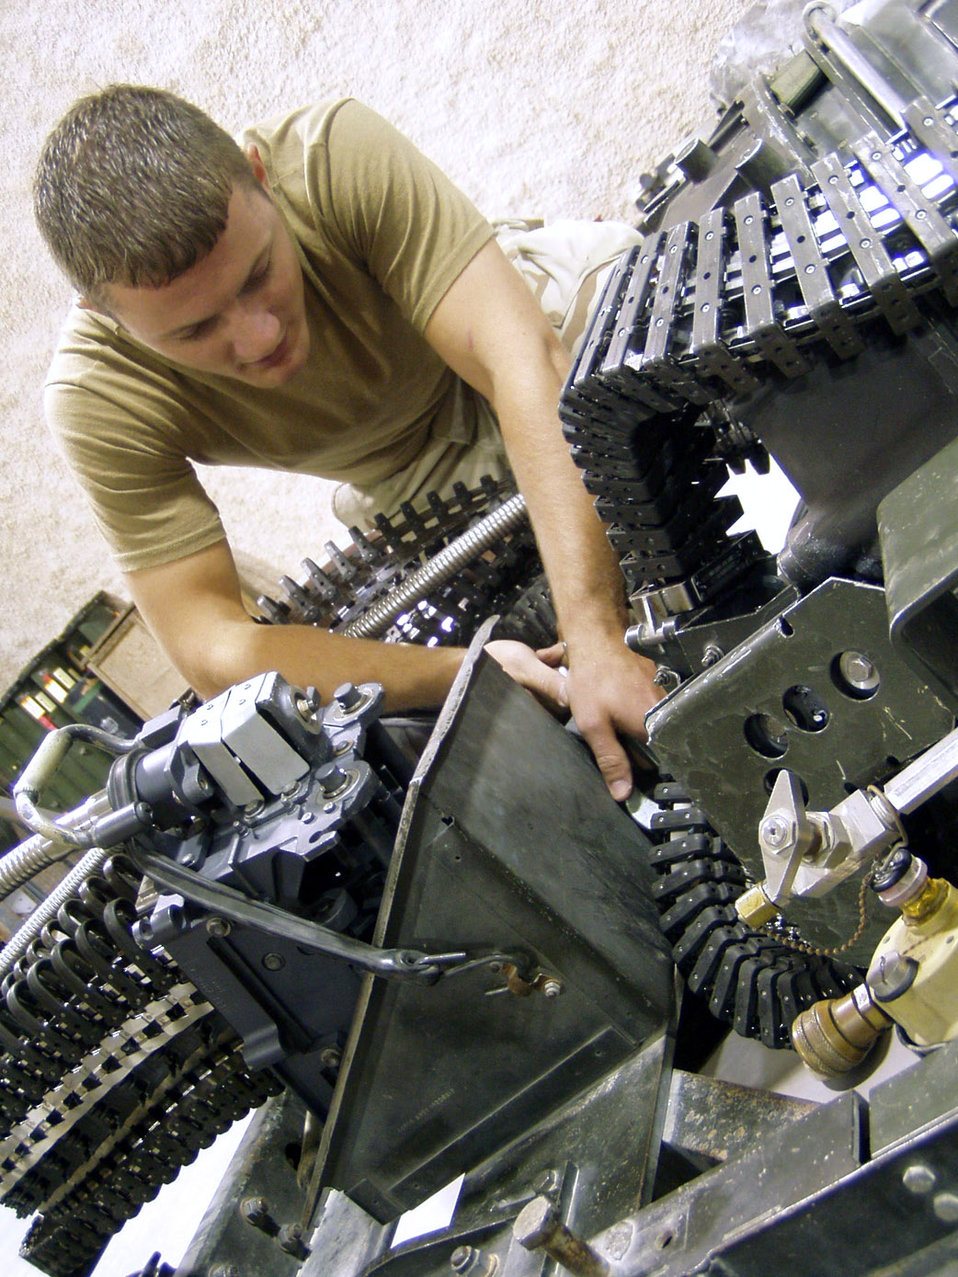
Loader up

SOUTHWEST ASIA -- Senior Airman Nathan Keller inspects an ammunition loader at a forward-deployed location. It is used to load 20 mm ammunition into F-15 Eagle and F-16 Fighting Falcon internal gun systems and can hold enough ammunition for about three aircraft. Environmental conditions in the desert require Airmen from the armament flight to inspect the loader every 45 days. Airman Keller is deployed from the 122nd Fighter Wing at Fort Wayne Air National Guard Base, Ind.